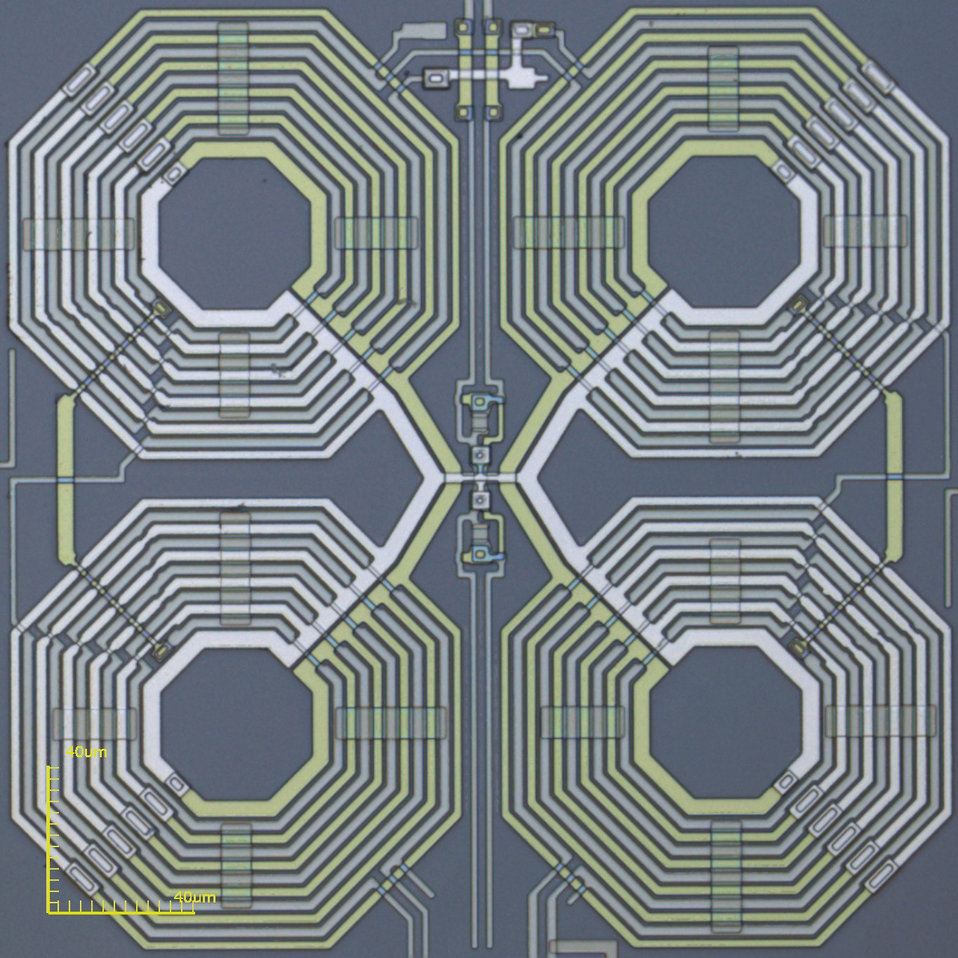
Micrograph of a SQUID amplifier, made at NIST in 2012, that is part of a circuit used to read signals from arrays of superconducting sensors. Small currents generated by the sensors are carried and amplified in the coils, which create magnetic fields detected by the SQUID (two small squares in the center of the image).